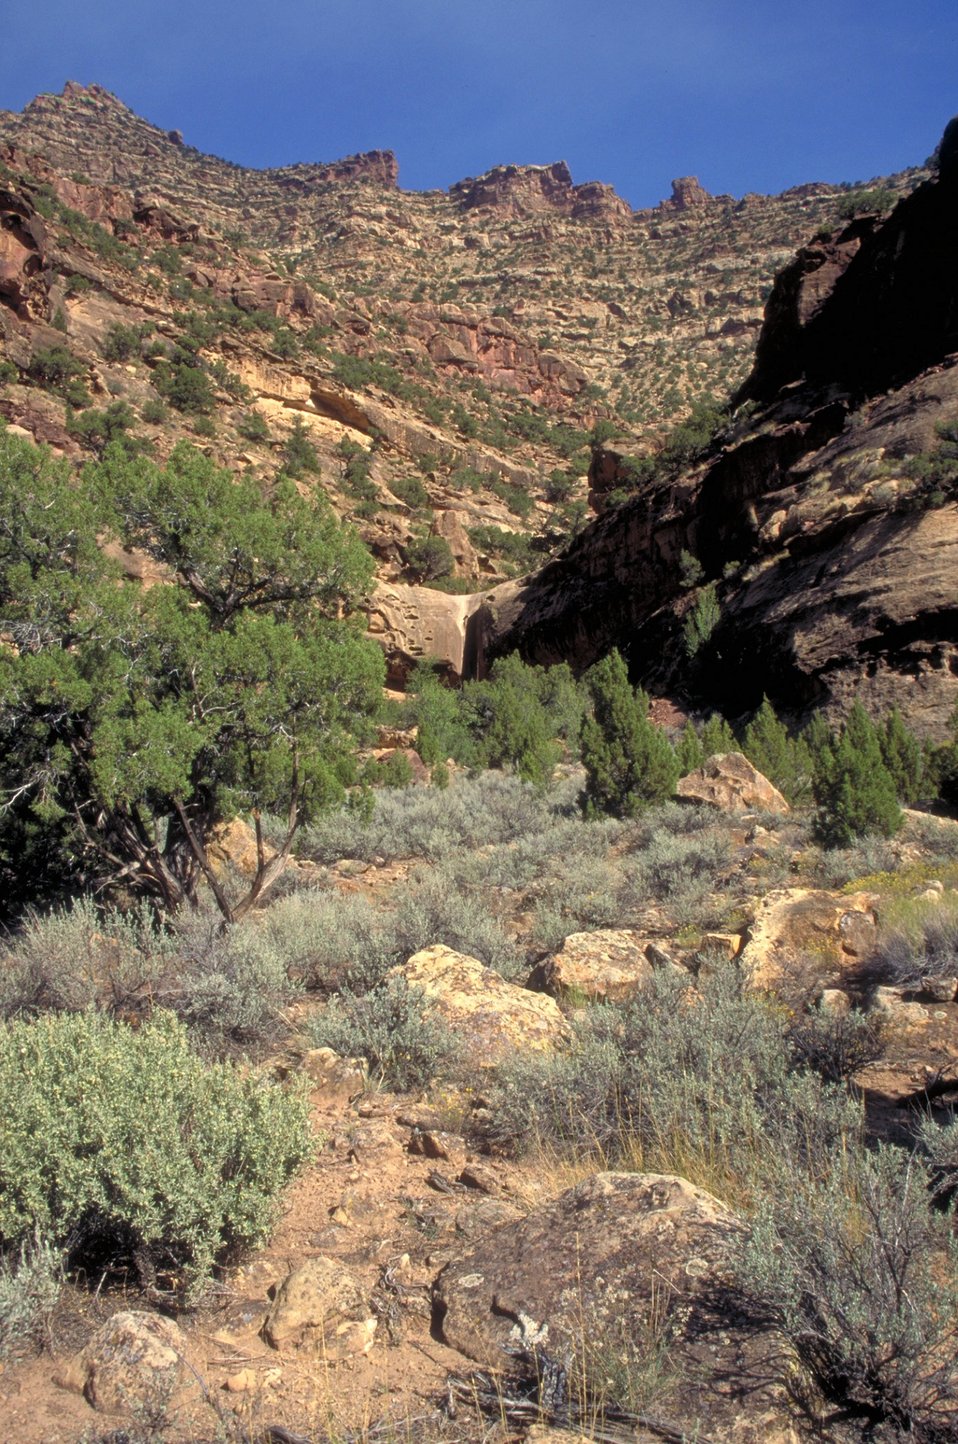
Desolation/Gray Canyons near Price, Utah.